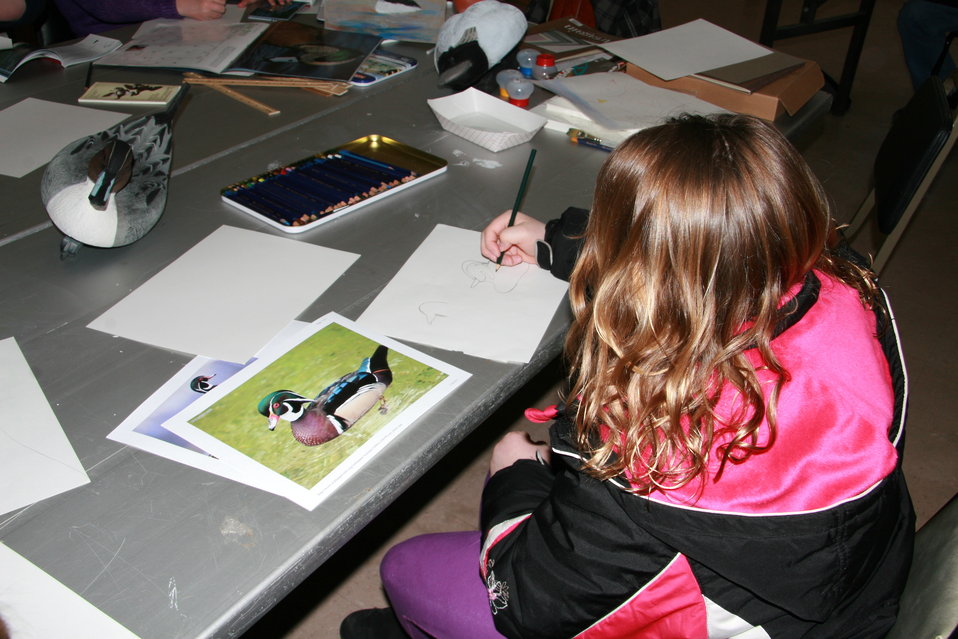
North Dakota Junior Duck Stamp Program

Using scientific and wildlife observation principles, the Jr. Duck Stamp Program helps students communicate visually what they have learned by creating an entry for the art contest.